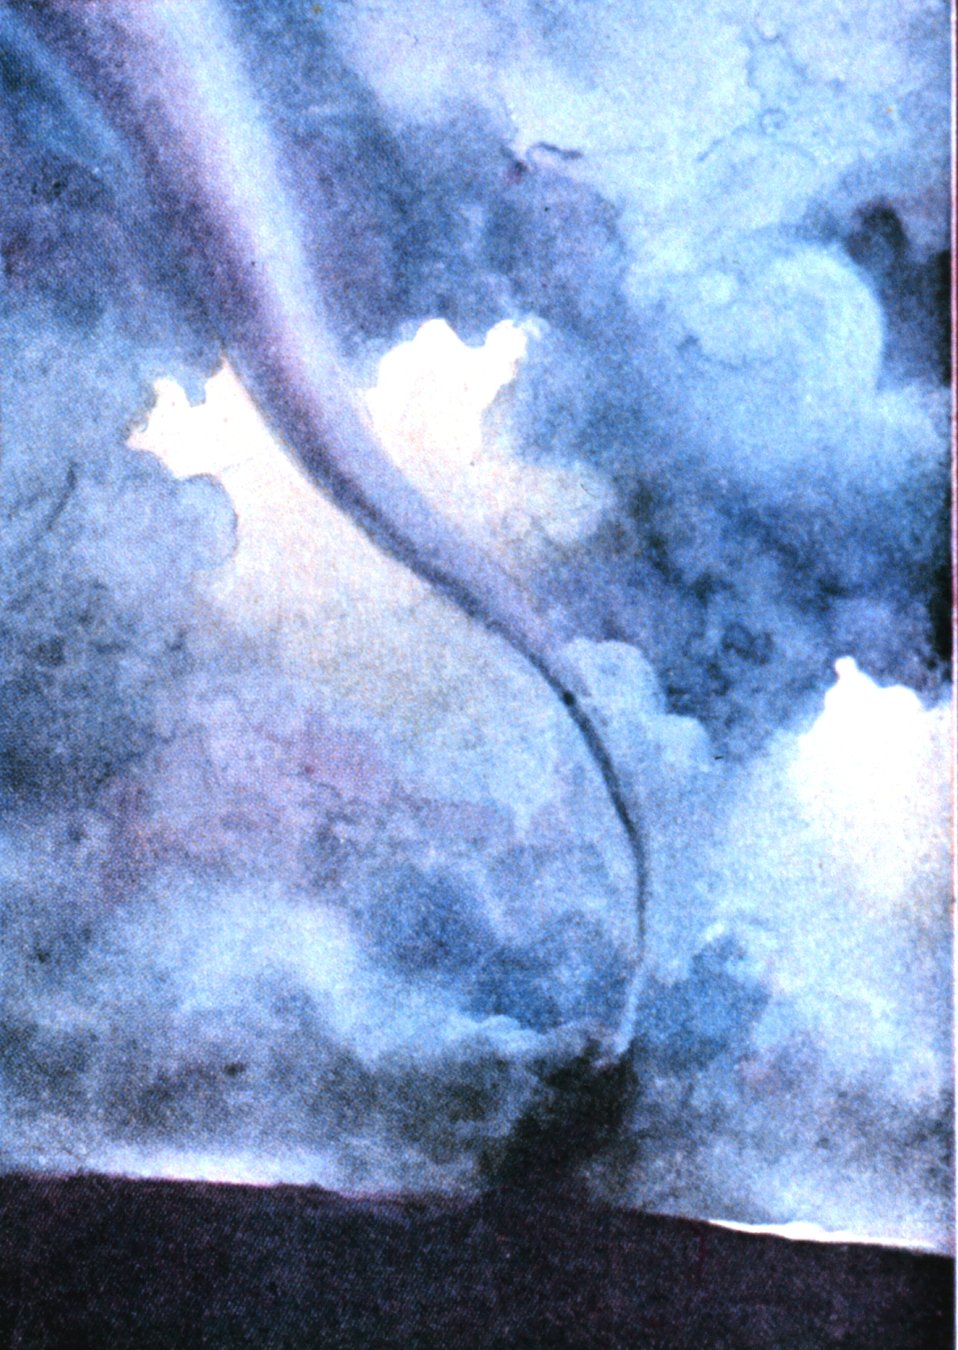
Frontispiece in: 'Our Weather' by Charles F. Talman, 1931. Library Call Number M T151o. This was painted from a photograph of a tornado near Elmwood, Nebraska .